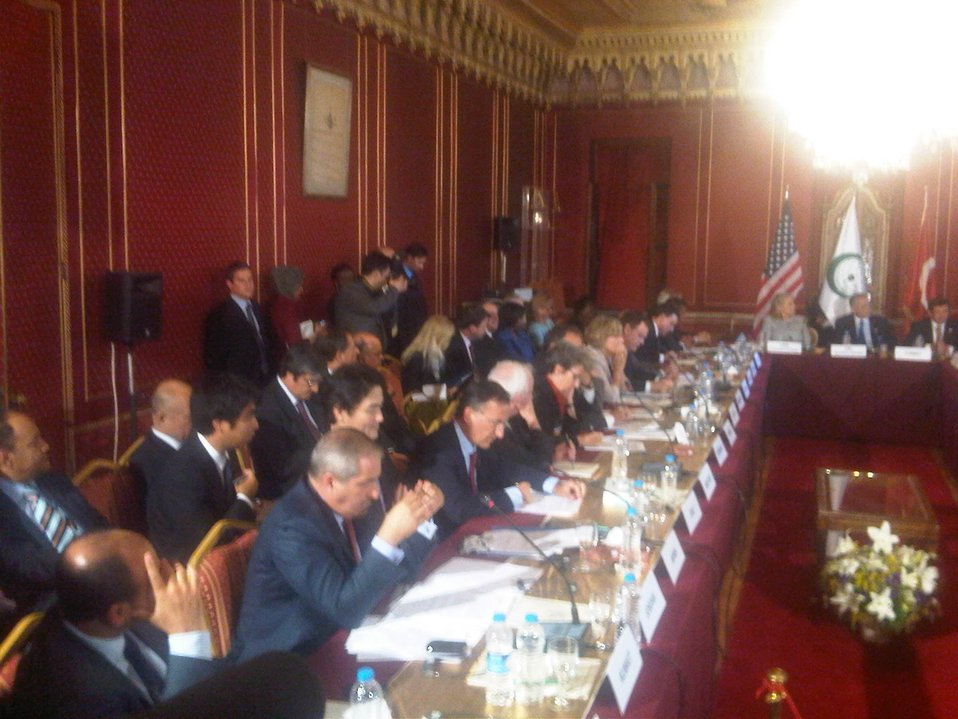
Secretary Clinton Sits With Members of the Organization of the Islamic Conference (OIC)

Members of the Organization of the Islamic Conference (OIC) discuss religious tolerance issues while meeting in Istanbul, Turkey, on July 15, 2011.